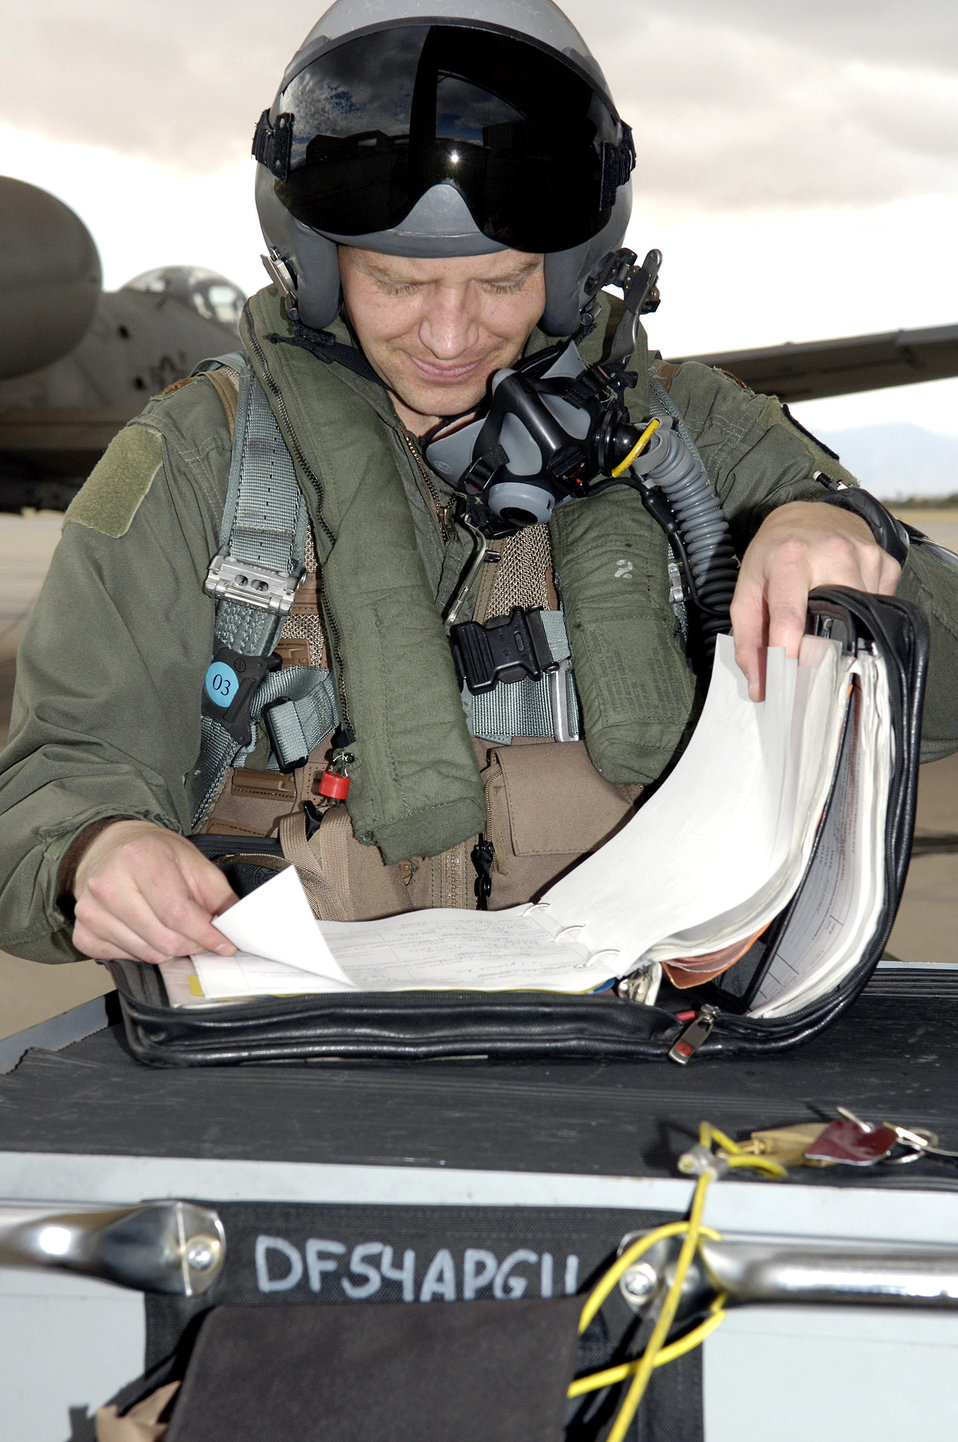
Checklist review

Maj. Vernie Pendley reviews his preflight checklist Wednesday, April 05, 2006, before entering his A-10 Thunderbolt II at Davis-Monthan Air Force Base, Ariz. Bushwhacker 06-02 is a Phase I and Phase II exercise demonstrating the 355th Wings ability to prepare to deploy and fight when called. Major Pendley is with the 354th Fighter Squadron.